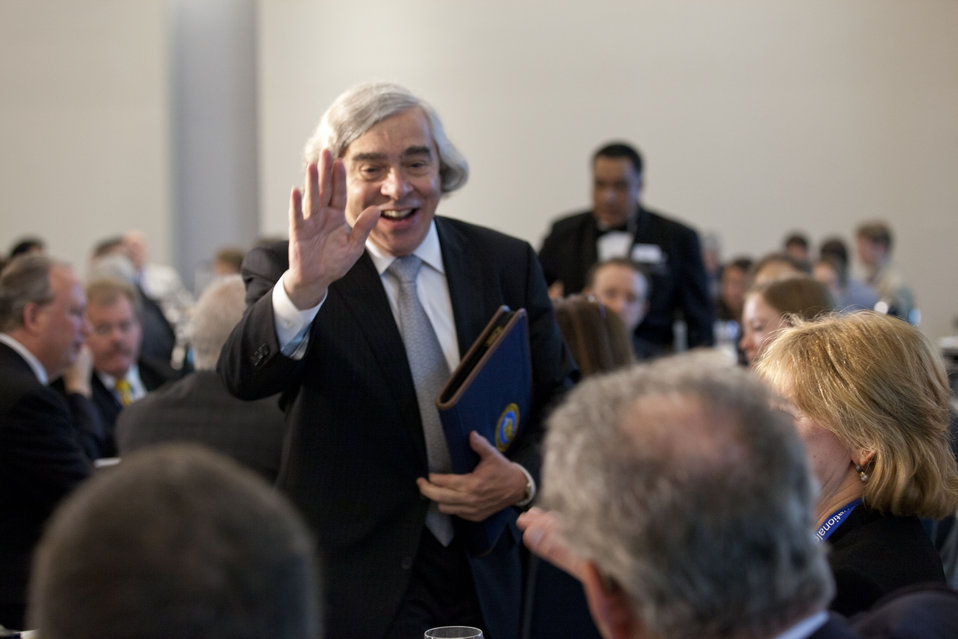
Secretary Moniz at the 2013 Energy Efficiency Global Forum

Shortly after being sworn in as Secretary of Energy, Dr. Moniz delivered remarks at the 2013 Energy Efficiency Global Forum, assuring that energy efficiency will be a 'big focus' for the Department of Energy.